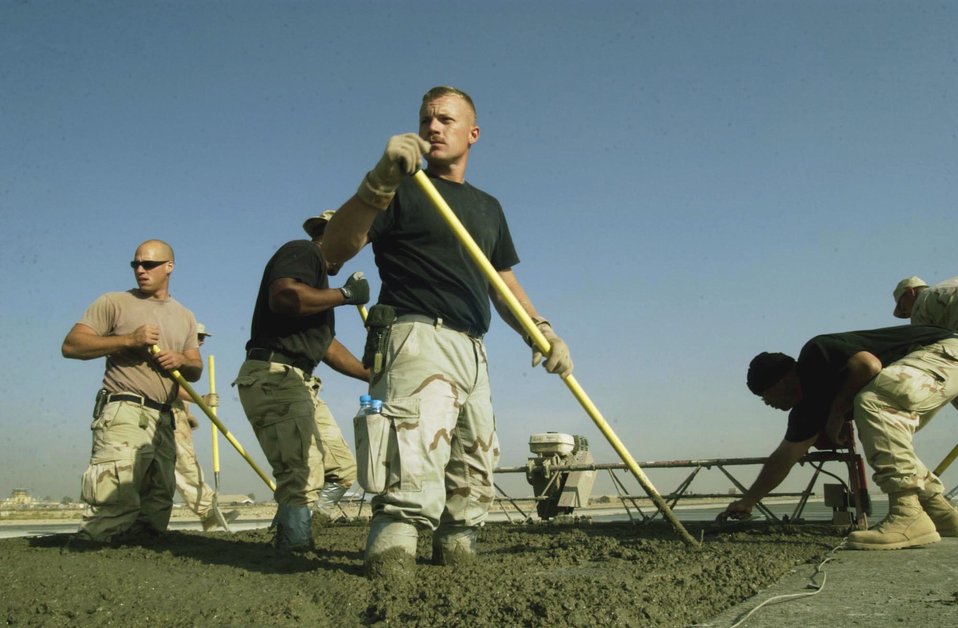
Paving the runway

BAGRAM AIR BASE, Afghanistan -- Staff Sgt. Joseph Adair, of the 455th Expeditionary Support Squadron, stands in 12 inches of concrete as he, and the rest of his team, work on the last strip of the runway here before completion.